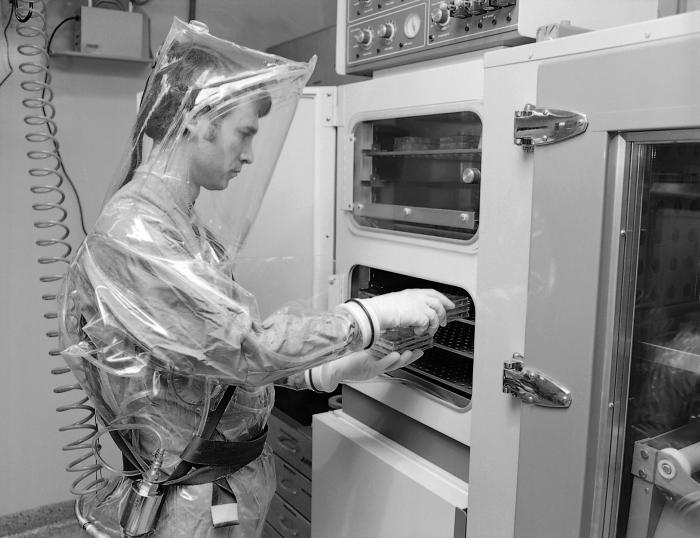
This 1978 photograph depicted Dr. J.V. Lange at a CO2 incubator that was located inside one of the CDC's early Containment Laboratories, also known as BSL environments.